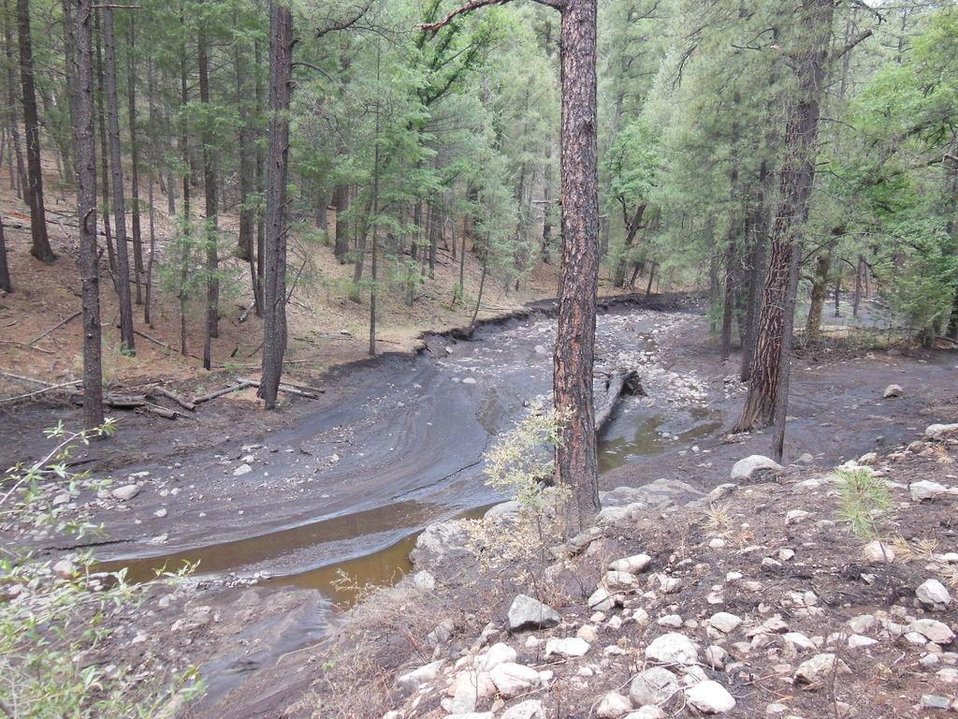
An ash flow in East Cayon area of the Silver Fire near Kingston, NM occurs from ash being washed into streams and creeks. The Silver Post Fire response has the Burned Area Emergency Response (BAER) team beginning operations to seed acres of high burn severity and to mulch additional acres. Seeding reduces effects to downstream life, property, and infrastructure by reducing erosion and runoff. Areas of high burn severity are to be seeded with a quick germinating, non-persistent annual cereal barley that would provide rapid ground cover. A small percentage of native perennial species would also be included to give the burned area a jump start in natural recovery, and provide for long-term ground cover. Mulch is the most effective treatment for controlling erosion and runoff, as it provides immediate ground cover. Mulch also assists in stabilizing soil in and around these areas.